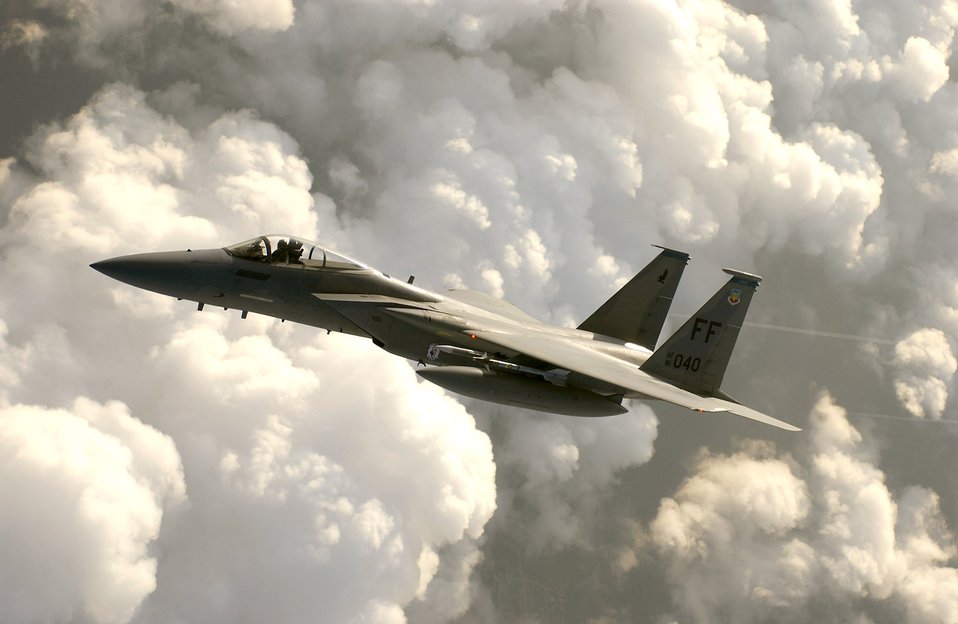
F-15s kept 'eye on the sky' during Super Bowl

F-15 Eagles from the Florida Air National Guard's 125th Fighter Wing from Jacksonville were on stand-by during the days leading up to the Super Bowl Feb. 4, and on game day flew low-level patrols over local airports and Miami's Dolphin Stadium.